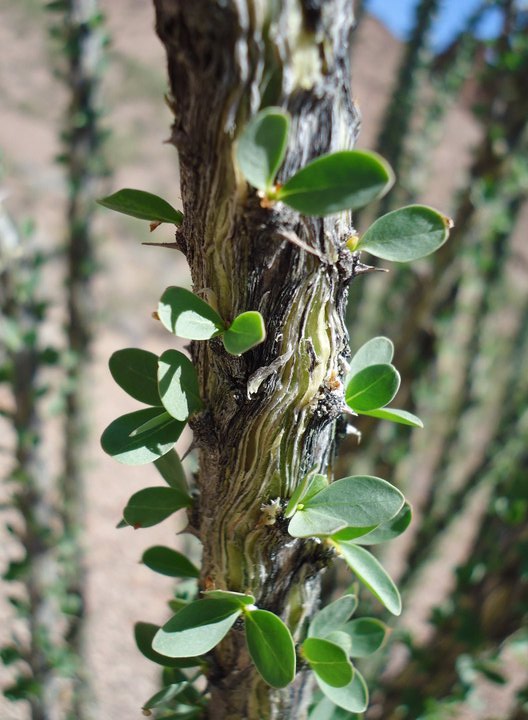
ocotillo cactus leafing after a big rain, AZ National Wildlife Refuge Complex

Photo: Molly McCarter, USFWS
2011 Wilderness Fellow